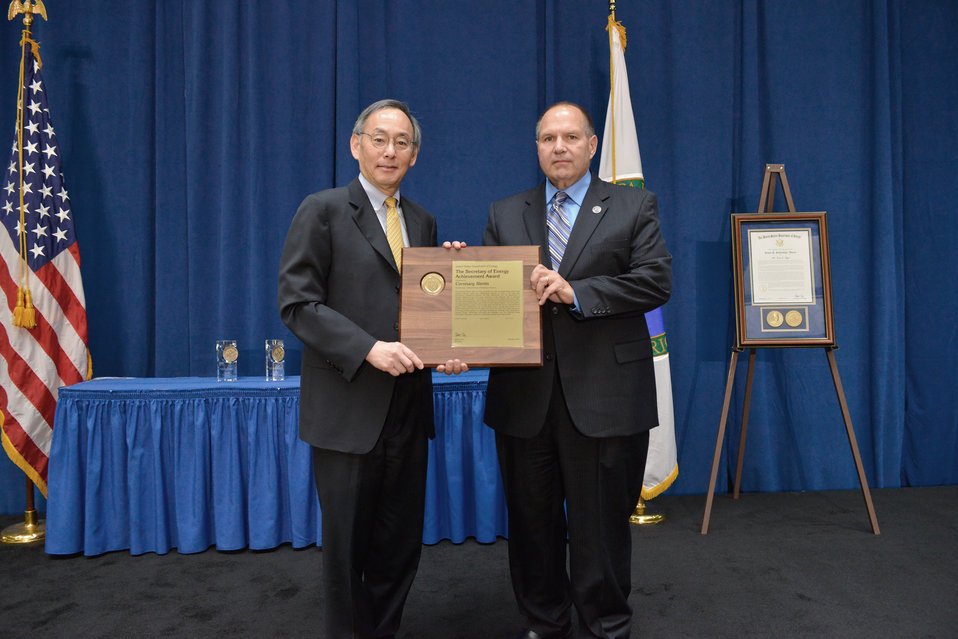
Coronary Stents

Awardees (not all pictured): Edward R. Argetsinger, Paul D. Jablonski, Paul C. Turner. The Coronary Stents Team was nominated for their ground-breaking work in the material sciences, using their metallurgical expertise to create a new alloy with tremendous commercial potential. The three researchers from the Department of Energy's National Energy Technology Laboratory worked diligently with an industrial partner, Boston Scientific Corporation, to develop a special platinum/chromium alloy. The alloy was subsequently used by Boston Scientific to create several product lines of coronary stents, directly improving the lives of heart disease patients around the globe. The award-winning coronary stent has seen great commercial success, approaching $4 billion in sales, representing a 45 percent share of the coronary stent market in the United States and 33 percent throughout the rest of the world. This stellar example of technology transfer represents a significant achievement on behalf of the Department’s National Energy Technology Laboratory and illustrates how the National Energy Technology Laboratory’s expertise in improving materials can improve lives.